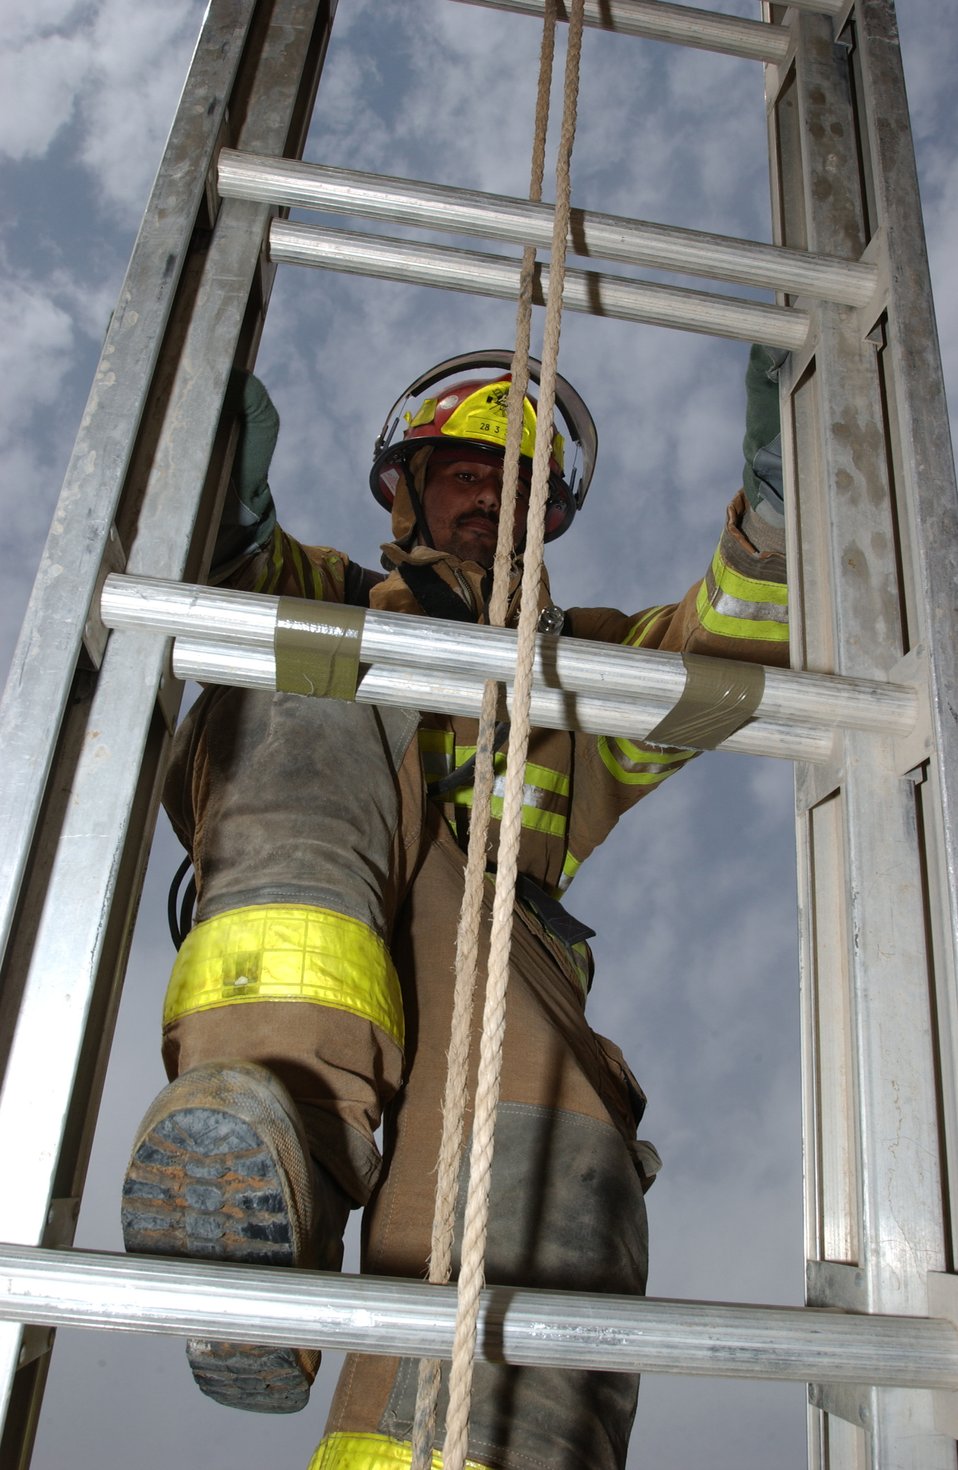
Air Force firefighters teach Iraqis blaze fighting basics

An Iraqi firefighter climbs a ladder Nov. 12 during a fire training confidence course. Iraqi firefighters from Al Nasariya completed a 6-week basic firefighting skills course taught by 407th Expeditionary Civil Engineer Squadron's fire and emergency services flight firefighters.